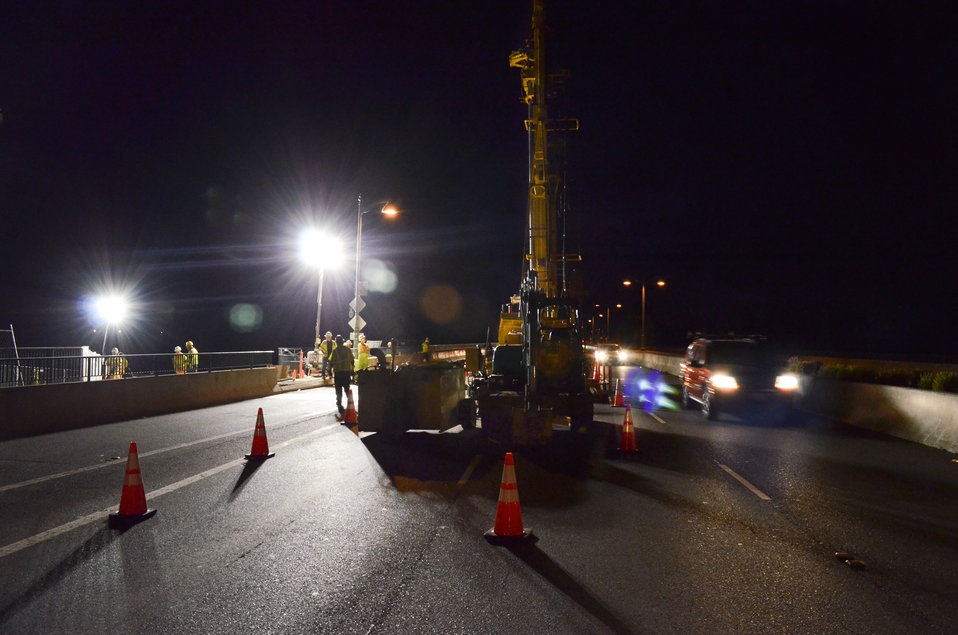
Temporary nighttime lane closures on Sacramento's Watt Avenue bridge

Temporary nighttime lane closures for Watt Avenue bridge are underway Aug. 15, 2013 in Sacramento Calif., as crews prepare to install a seepage cutoff wall in the levee beneath the bridge. Corps representatives, the project contractor and the California Highway Patrol closed three lanes of traffic during non-commute hours in order to drill through the bridge to access the levee.